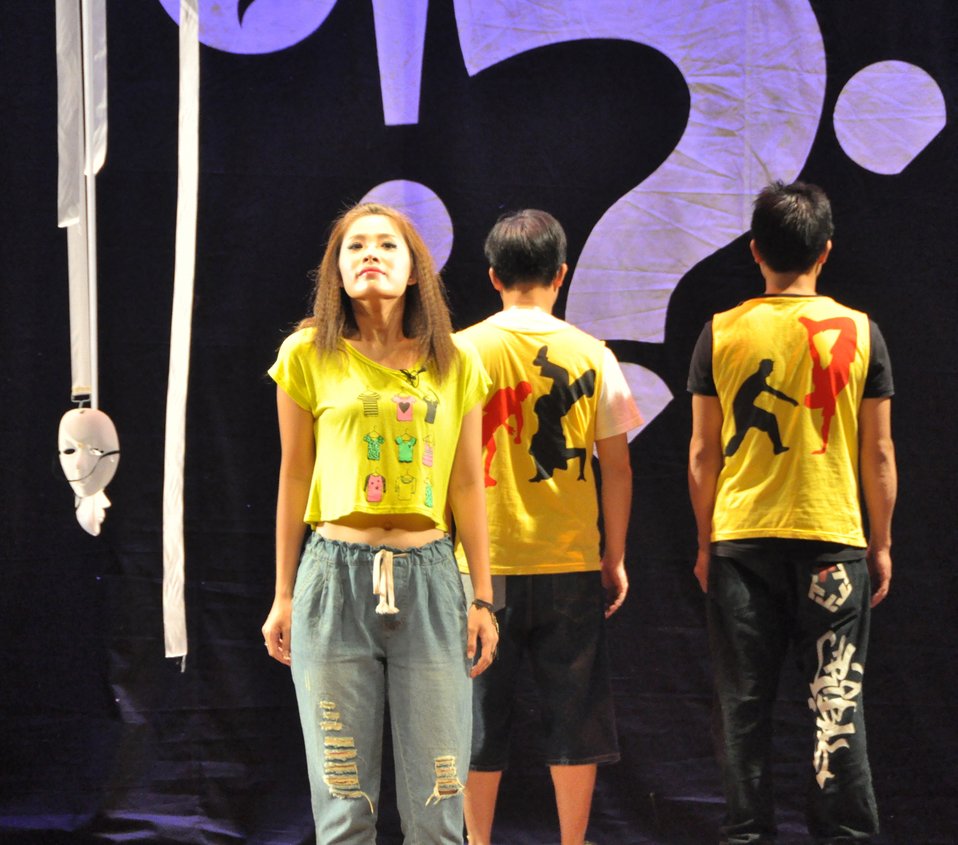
PEPFAR Musical Questions and Exclamations

Hanoi, May 17, 2013